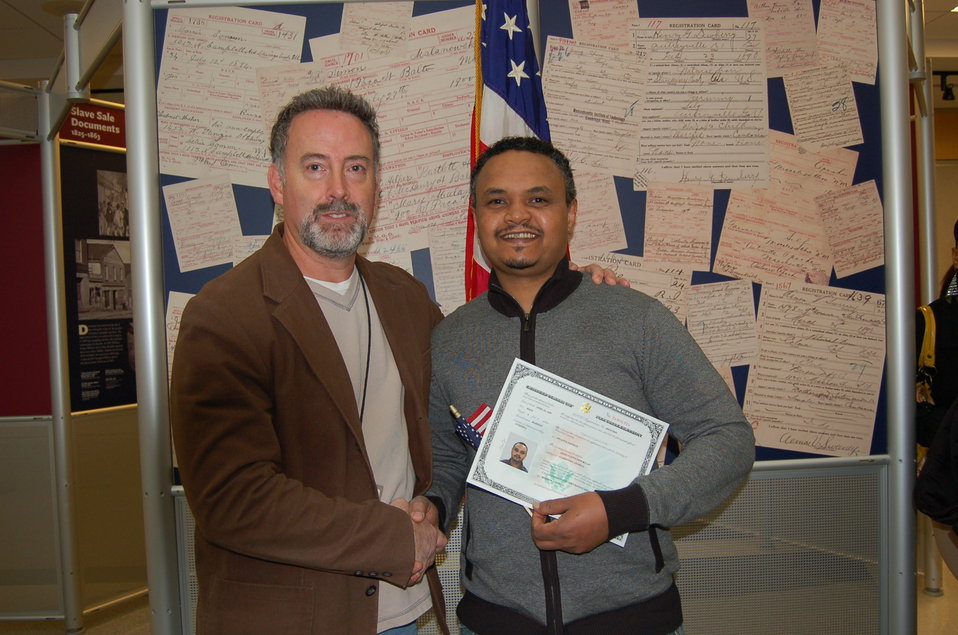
New Citizens